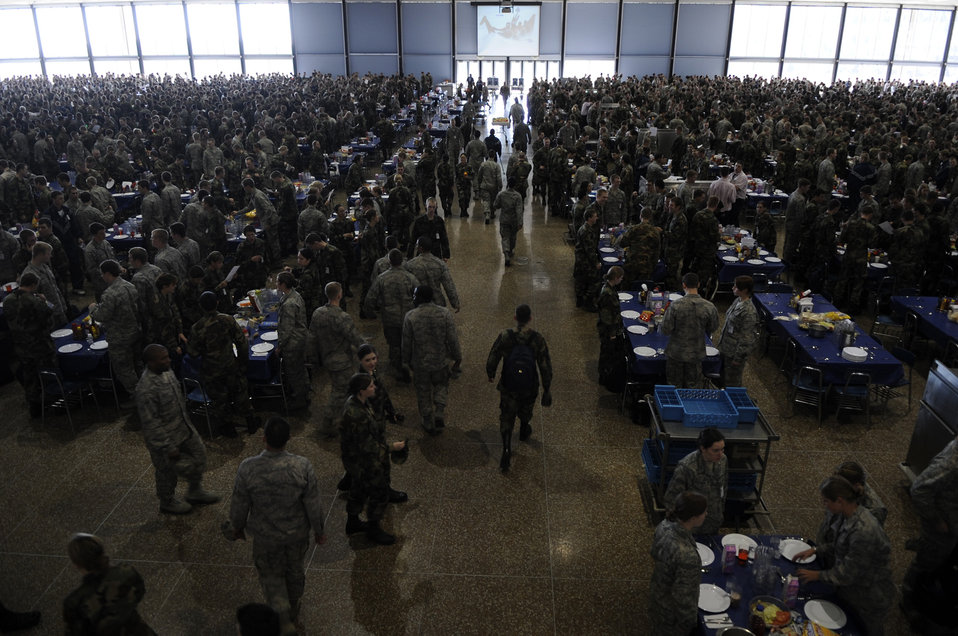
U.S.Air Force Academy Mitchell Hall Cadet Dining Facility

Cadets stand beside their chairs Jan. 23 as they wait for the rest of the cadets to enter Mitchell Hall Cadet Dining Facility at the U.S. Air Force Academy in Colorado Springs, Colo. so they can begin lunch. The dining facility feeds approximately 4450 cadets and sits on 1.75 acres.